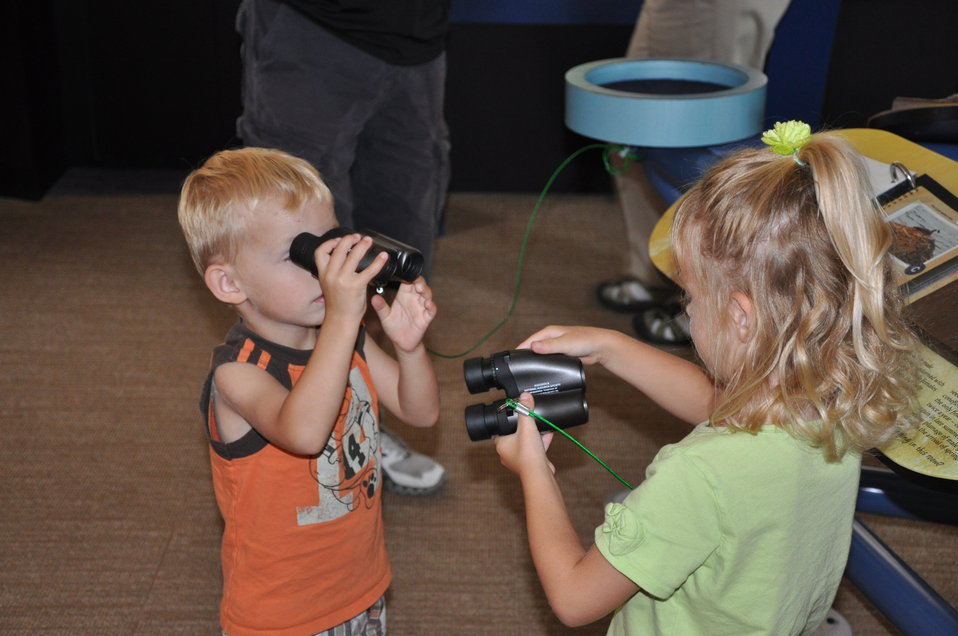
Exploring exhibits